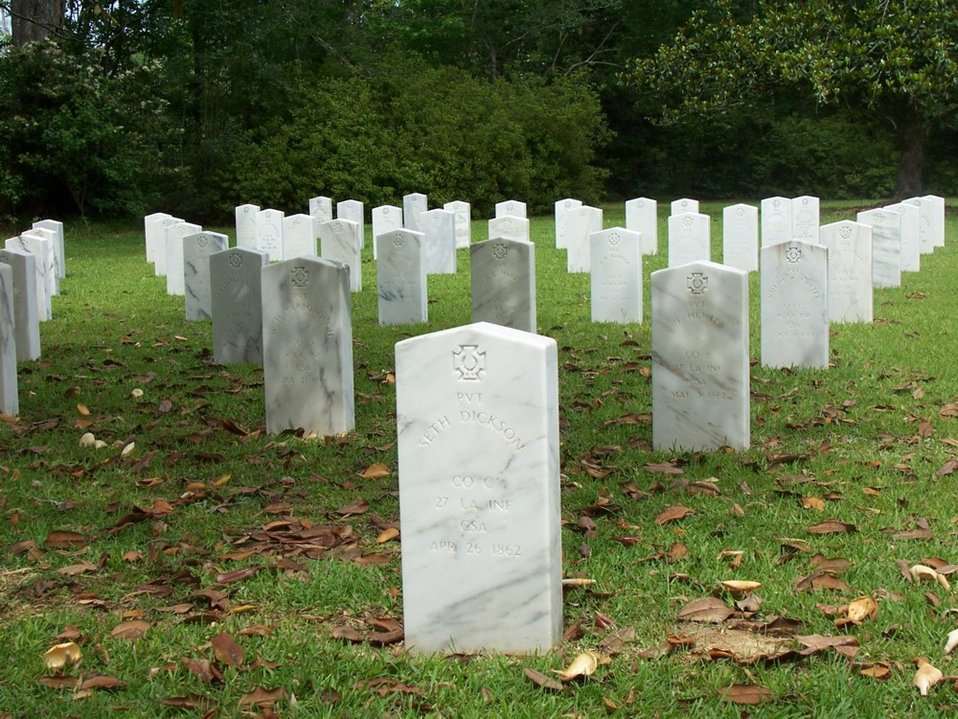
Confederate cemetery at Camp Moore, Louisiana.